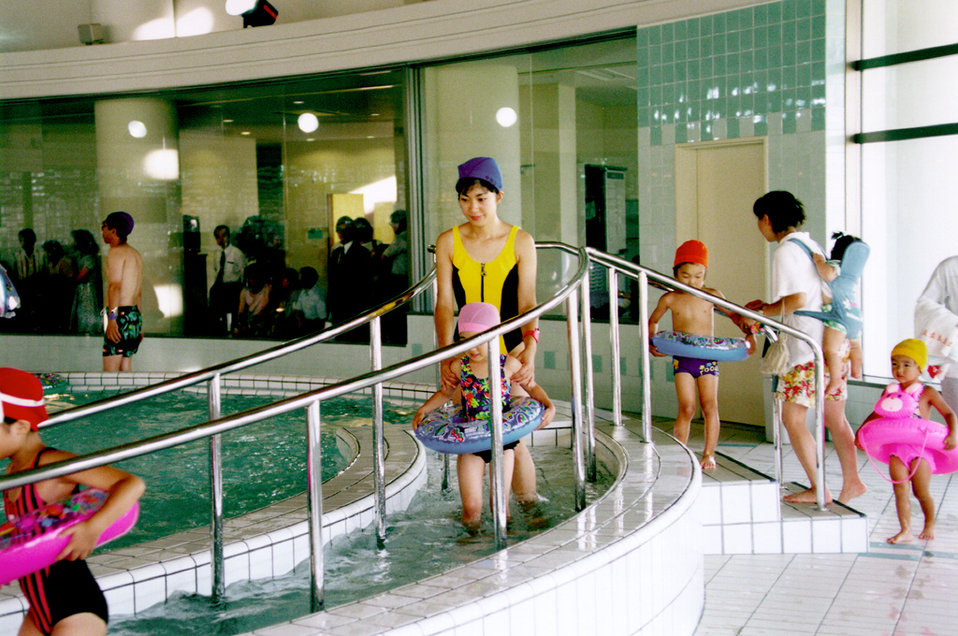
This is one of a series of three photographs (PHIL# 9096 - 9098), which revealed the interior of a large indoor publicly-accessible swimming pool that provided an elegant ramped access into the pool, steps, and a transfer ledge that enclosed the pool at its edge. In this particular image, a group of adults and children were frolicking about in, and around the pool, in the area where one was able to enter the pool via a ramp with its accompanying handrail. This collection from the Center for Universal Design's Universal Exemplars, is from the Chou Silver Zone Complex located in Akita Prefecture in Northern Japan. The pool allowed people the ability to make personal choices in how they entered and exited the pool, according to their comfort and safety levels. Taking physical impairments into account during the designing of such a facility only enhanced the enjoyment of all who visited this recreation area.